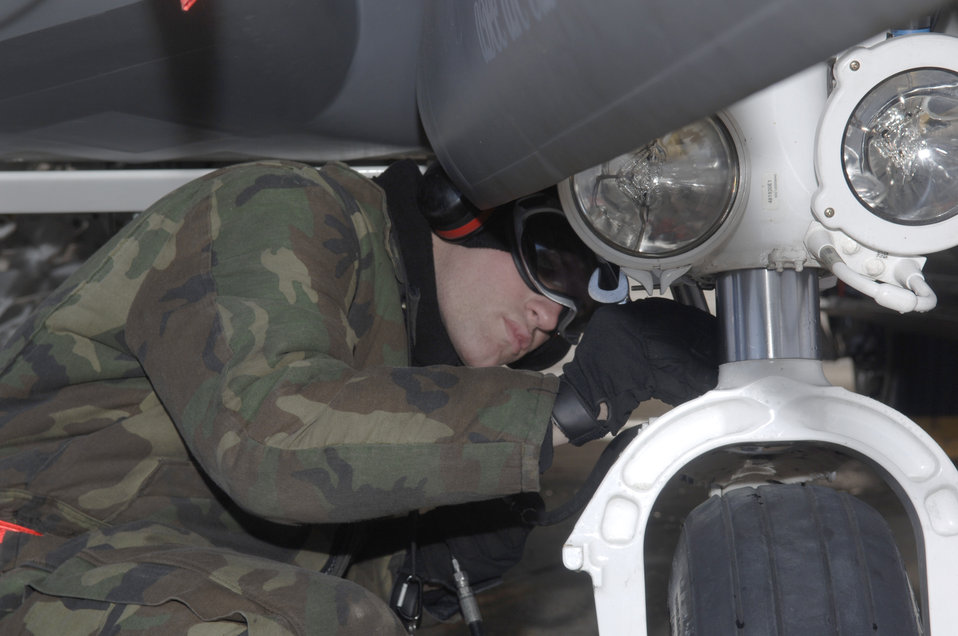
Langley Operational Readiness Exercise

Senior Airman Richard McClane repairs an aircraft's flat tire during an operational readiness exercise Jan. 8, 2011, at Base Langley Eustis, Va. The 1st Fighter Wing, 633rd Air Base Wing and 192nd Fighter Wing tested their readiness ability to deploy cargo, aircraft and people within a limited time frame if faced with a disaster or imminent threat. Airman McClane is a weapons load crew chief with the1st Maintenance Squadron.